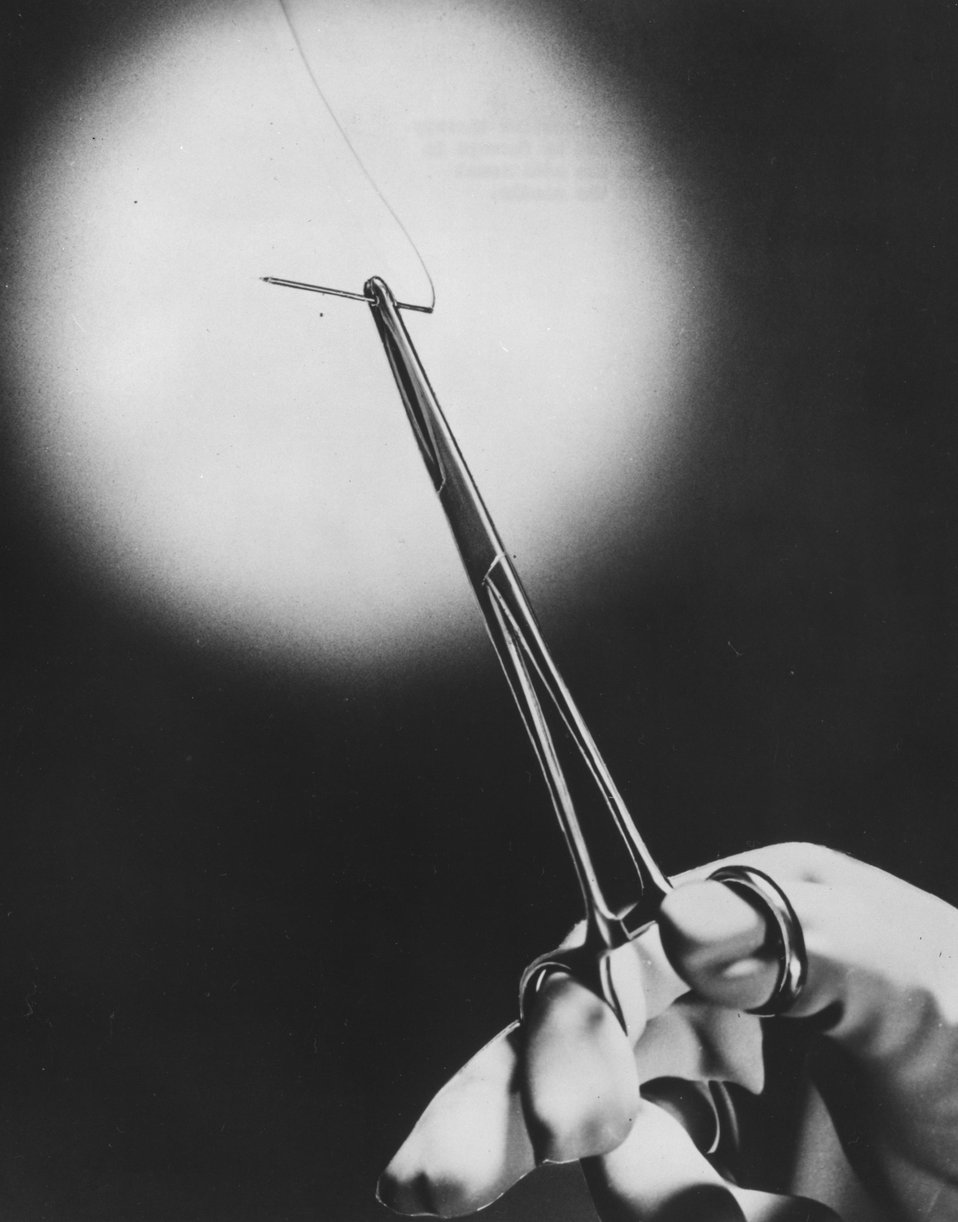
A cobalt-60 needle used in radioactive therapy. Note that the needle is handled by forceps in order to give the physician the additional protection of distance from the needle. Circa 1955.